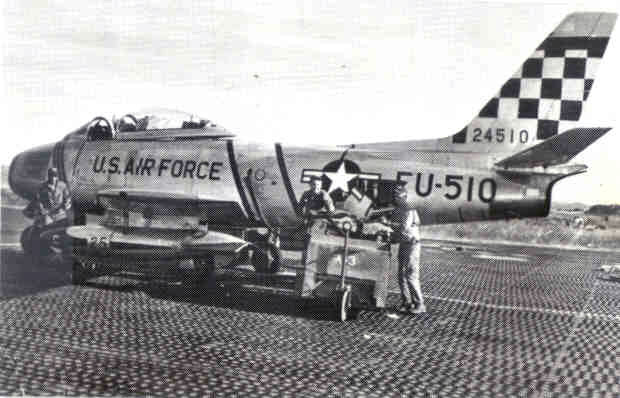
F-86 Sabre in Korea

Ground crews prepare an F-86 Sabre with its 51st Fighter Interceptor Wing